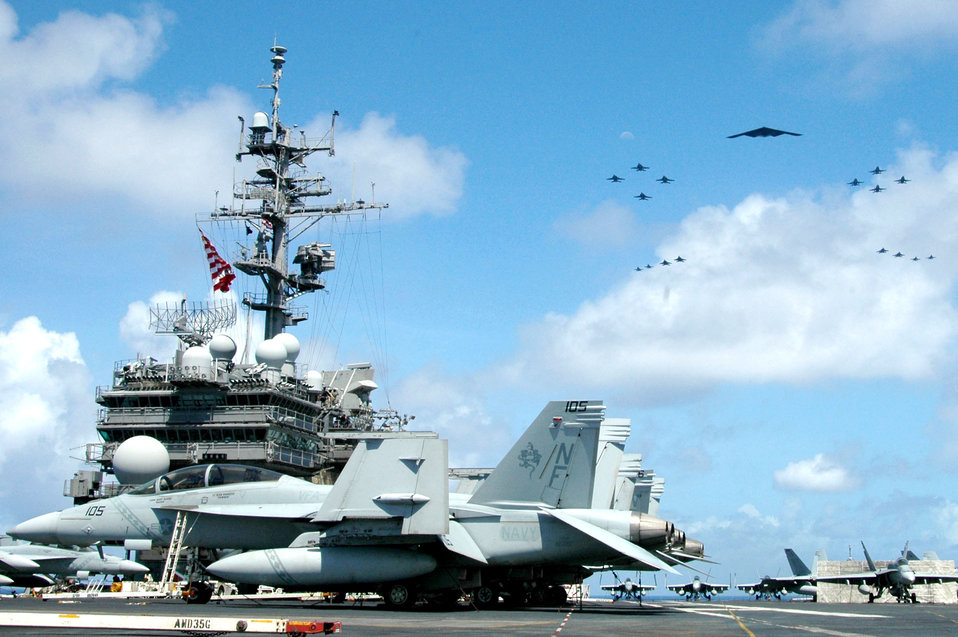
Joint operations in the Pacific

A B-2 Spirit and 16 other aircraft from the Air Force, Navy and Marine Corps fly over an aircraft carrier in the western Pacific Ocean on Sunday, June 18, to kick off Exercise Valiant Shield 2006. The joint exercise consists of 28 naval vessels, more than 300 aircraft and approximately 20,000 servicemembers.